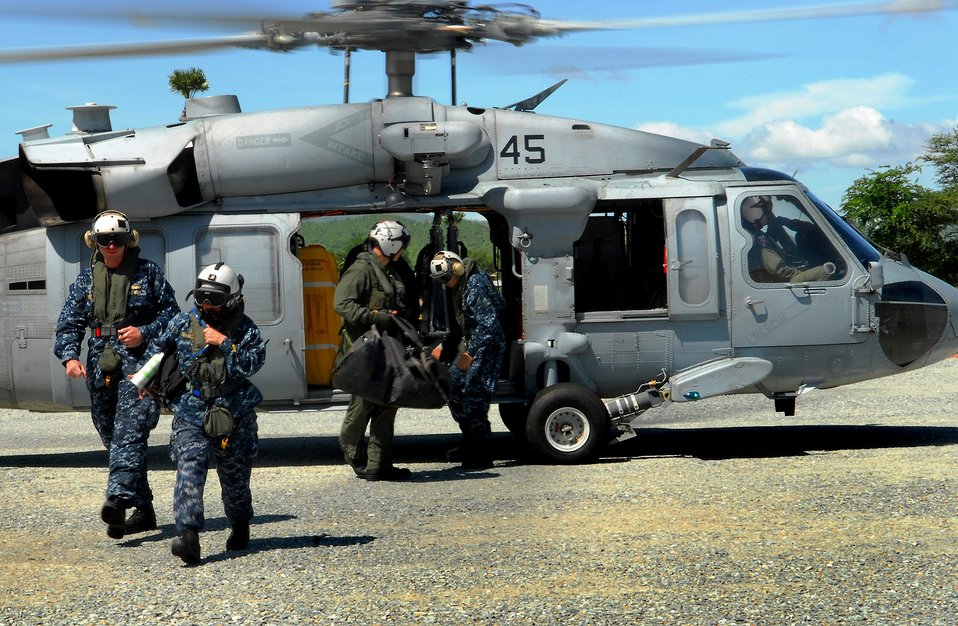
PP2010 Commander, Capt. Franchetti, Disembarks an MH-60S Knighthawk Helicopter

Commander of the Pacific Partnership, Capt. Lisa Franchetti, disembarks an MH-60S Knighthawk helicopter from the Helicopter Combat Squadron 23 “Wild Cards” while en route to a medical community service event at Veal Ang Popel Clinic in Kampong Spue, Cambodia, on June 25, 2010.